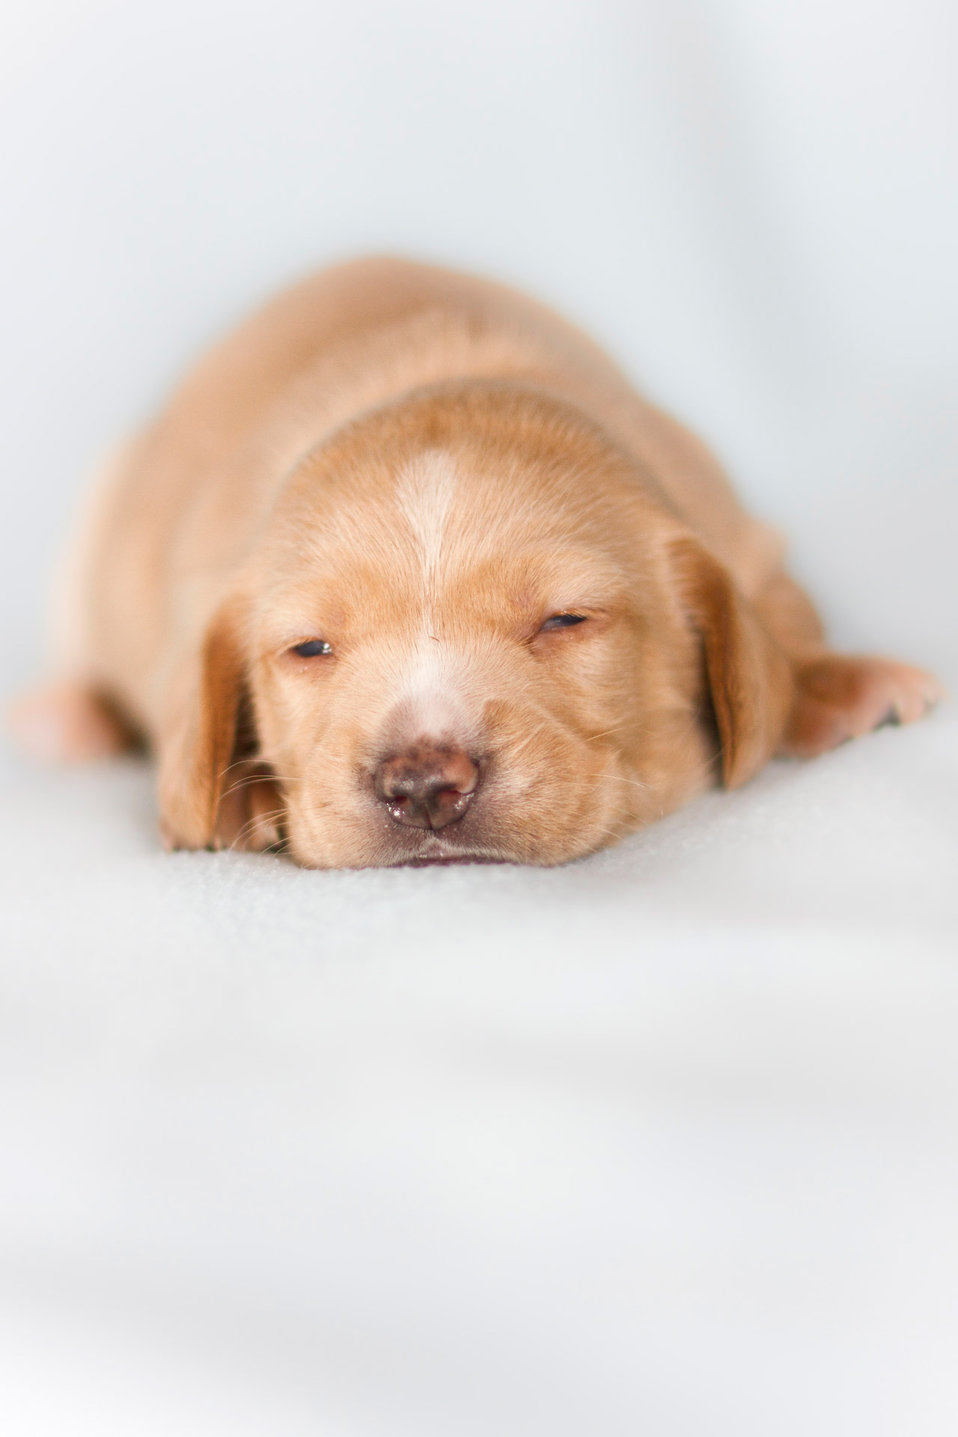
Puppy

Sleeping puppy.